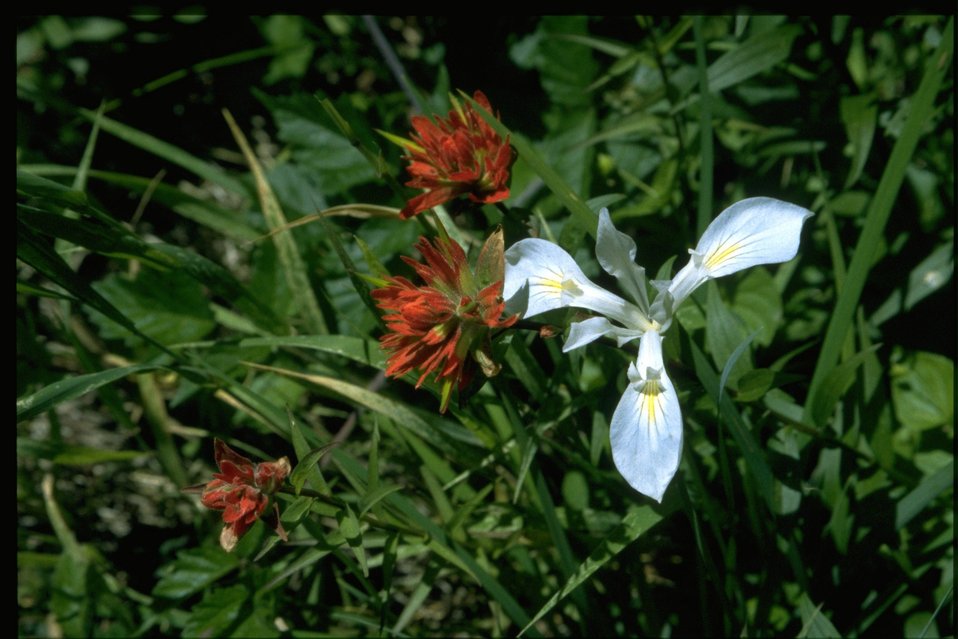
Medium shot of Castilleja and Iris tenax.